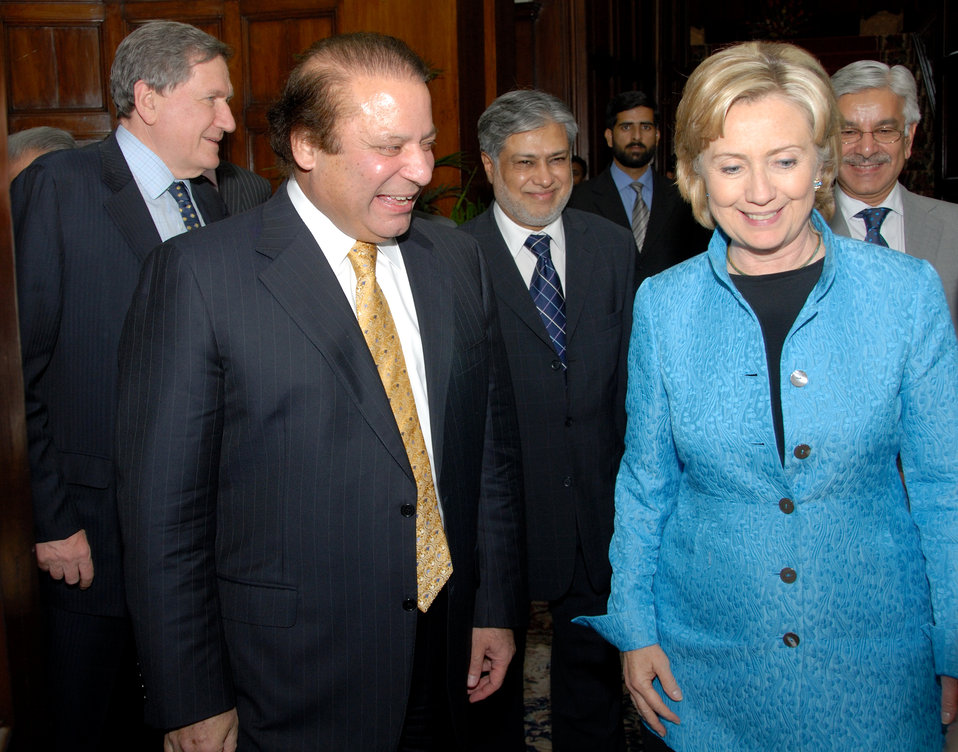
Secretary Clinton Meets With Former Pakistani Prime Minister

U.S. Secretary of State Hillary Rodham Clinton shares a light moment with Pakistan’s former Prime Minister Mian Nawaz Sharif at his residence in Lahore, Pakistan October 29, 2009. U.S. Special Envoy Richard Holbrooke, Pakistan Muslim League (PML-N) leaders Ishaq Dar and Khawaja Aasif are also seen in the picture.